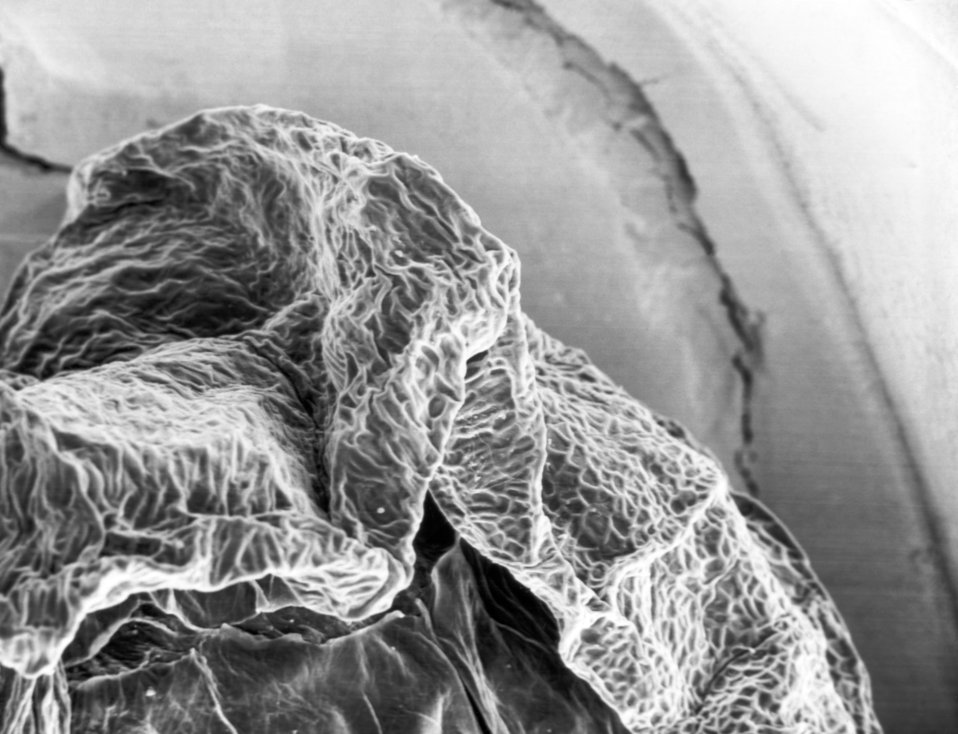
This electron micrograph reveals the textured surface of a blackberry Rubus villosus.